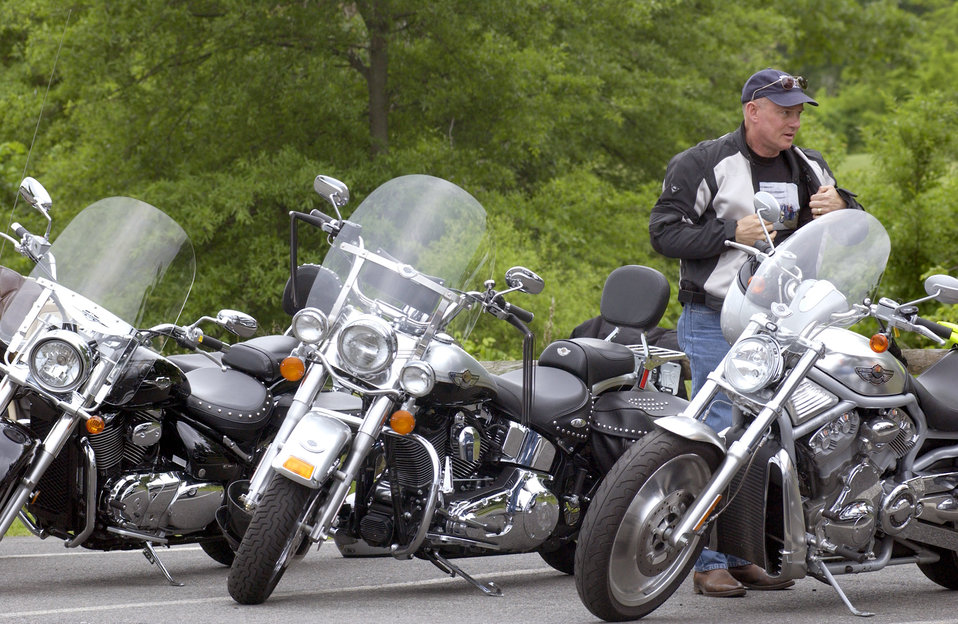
Motorcycle safety forum held at Andrews

ANDREWS AIR FORCE BASE, Md. -- Lt. Gen. Richard V. Reynolds suits up after attending a motorcycle safety forum here May 28. About 60 riders attended the forum including 12 from Wright Patterson Air Force Base, Ohio. General Reynolds is the Air Force Materiel Command vice commander at Wright-Patterson.